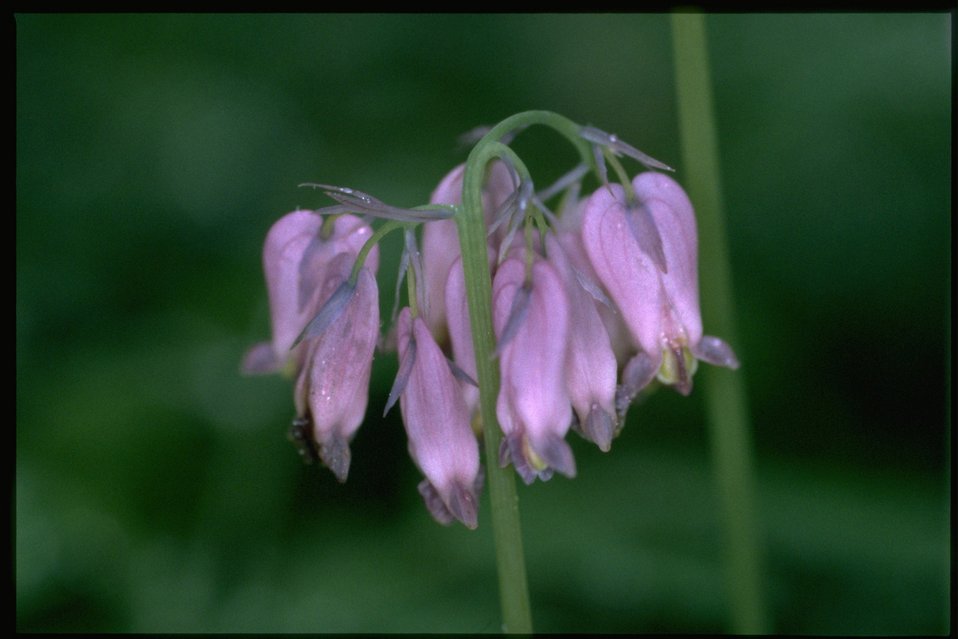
Closeup shot of Pacific Bleeding Heart wildflower (Dicentra formosa).